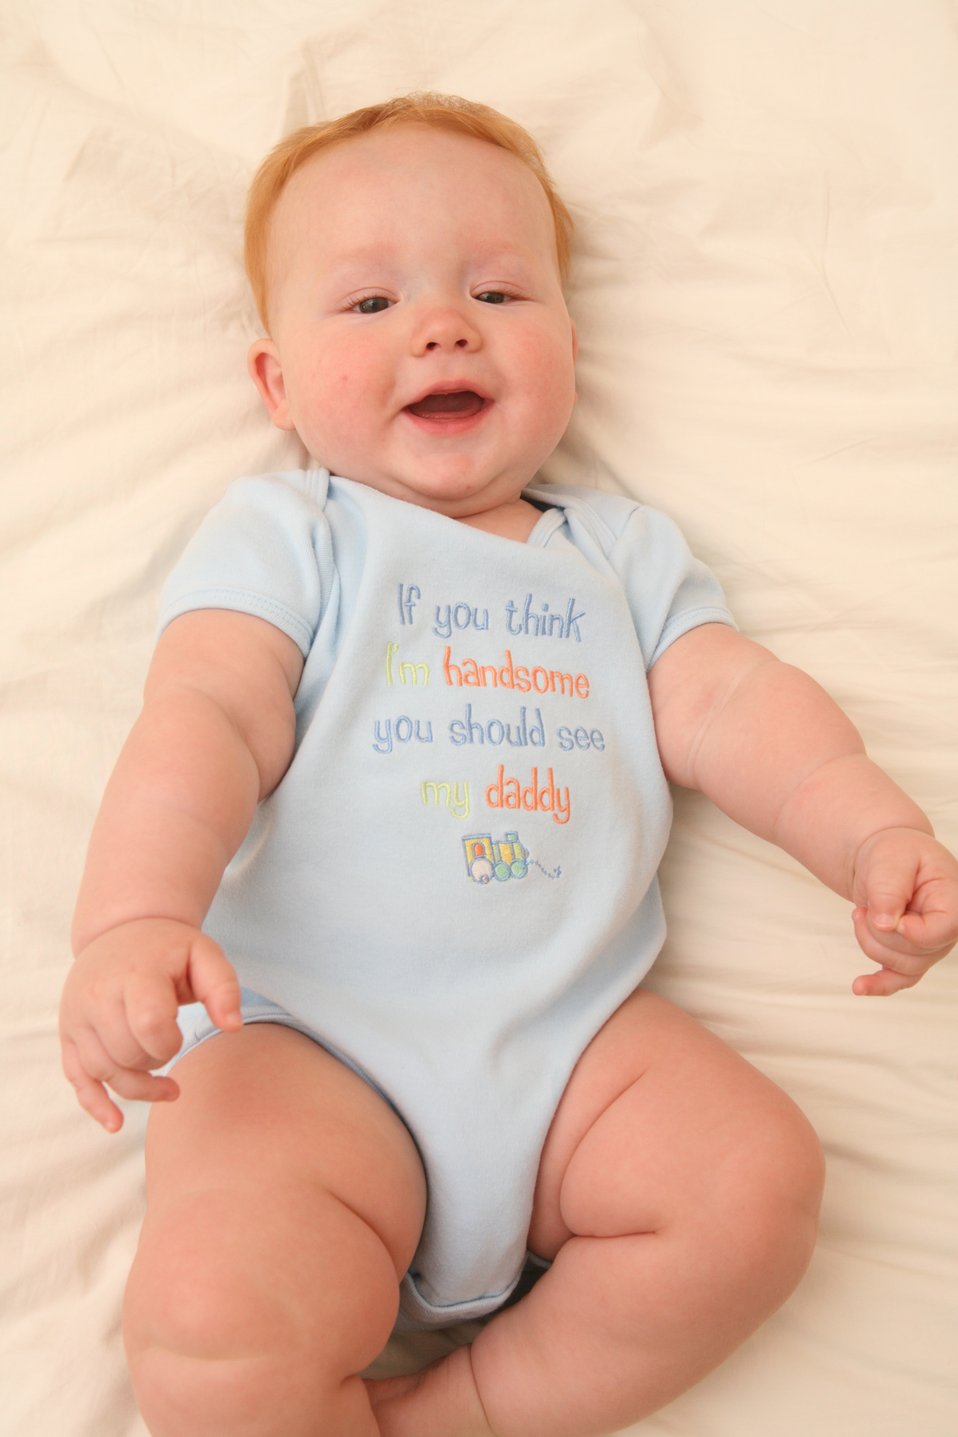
Infant wearing a onesie